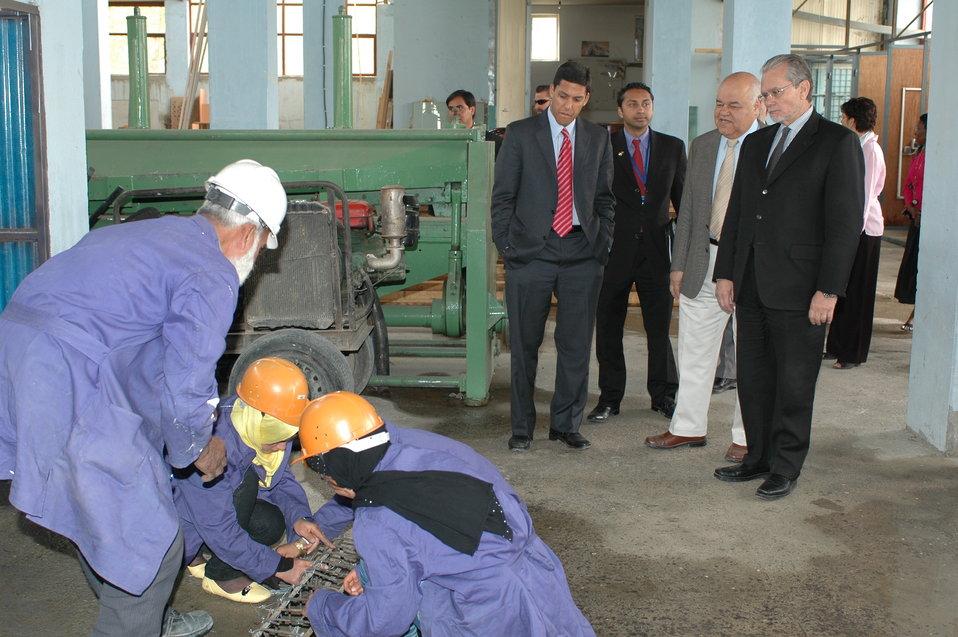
Dr Shah Visits Votech in Kabul